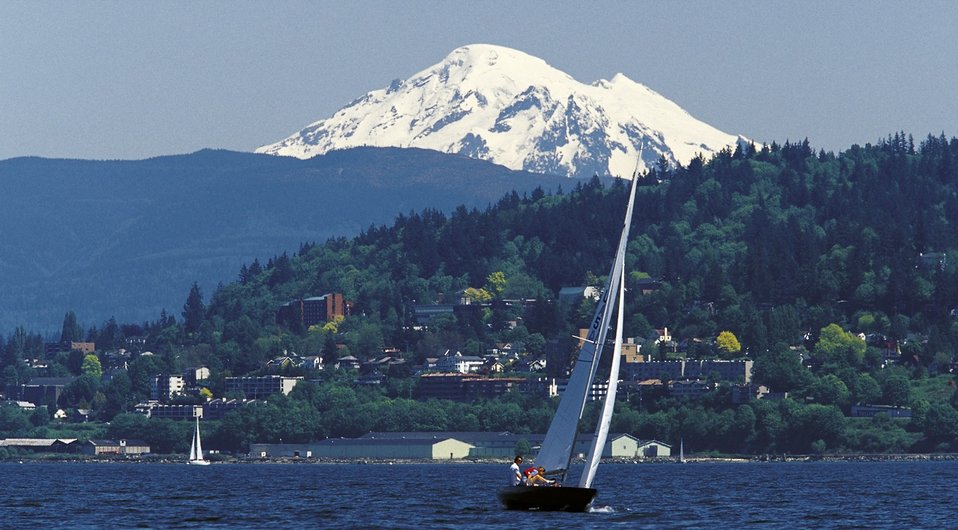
Sailing in Bellingham Bay

A sail boat races across Bellingham Bay in northern Puget Sound with Mt. Baker in the background. Boating is a hugely popular recreational activity on Puget Sound.

Learn more about the Puget Sound Ecosystem

Learn more about EPA